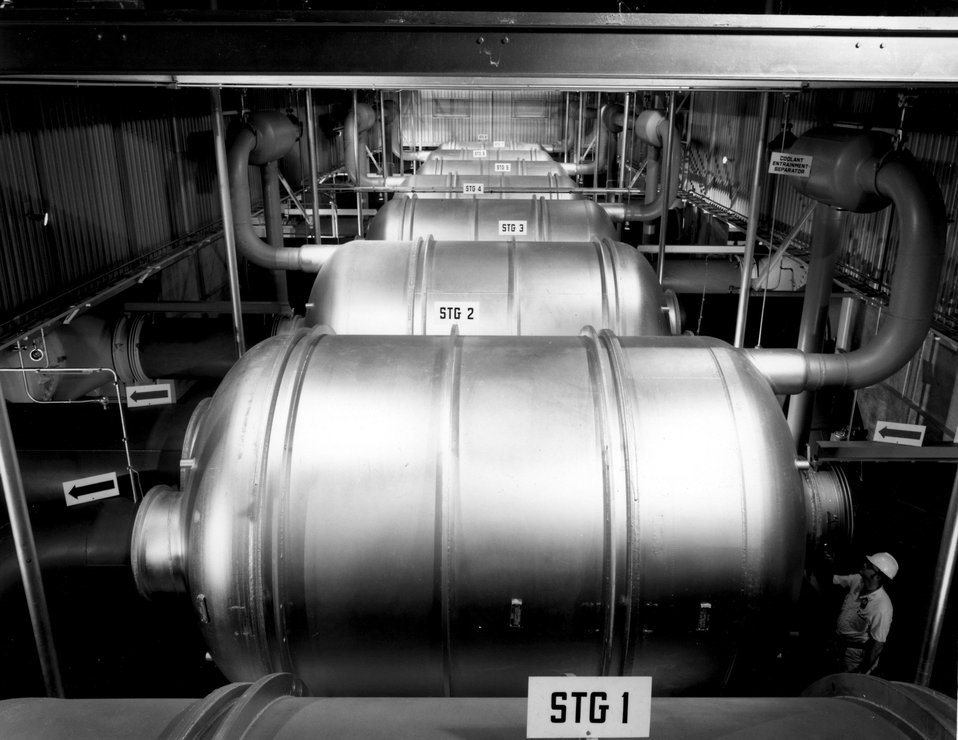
The gaseous diffusion process. Circa 1972.